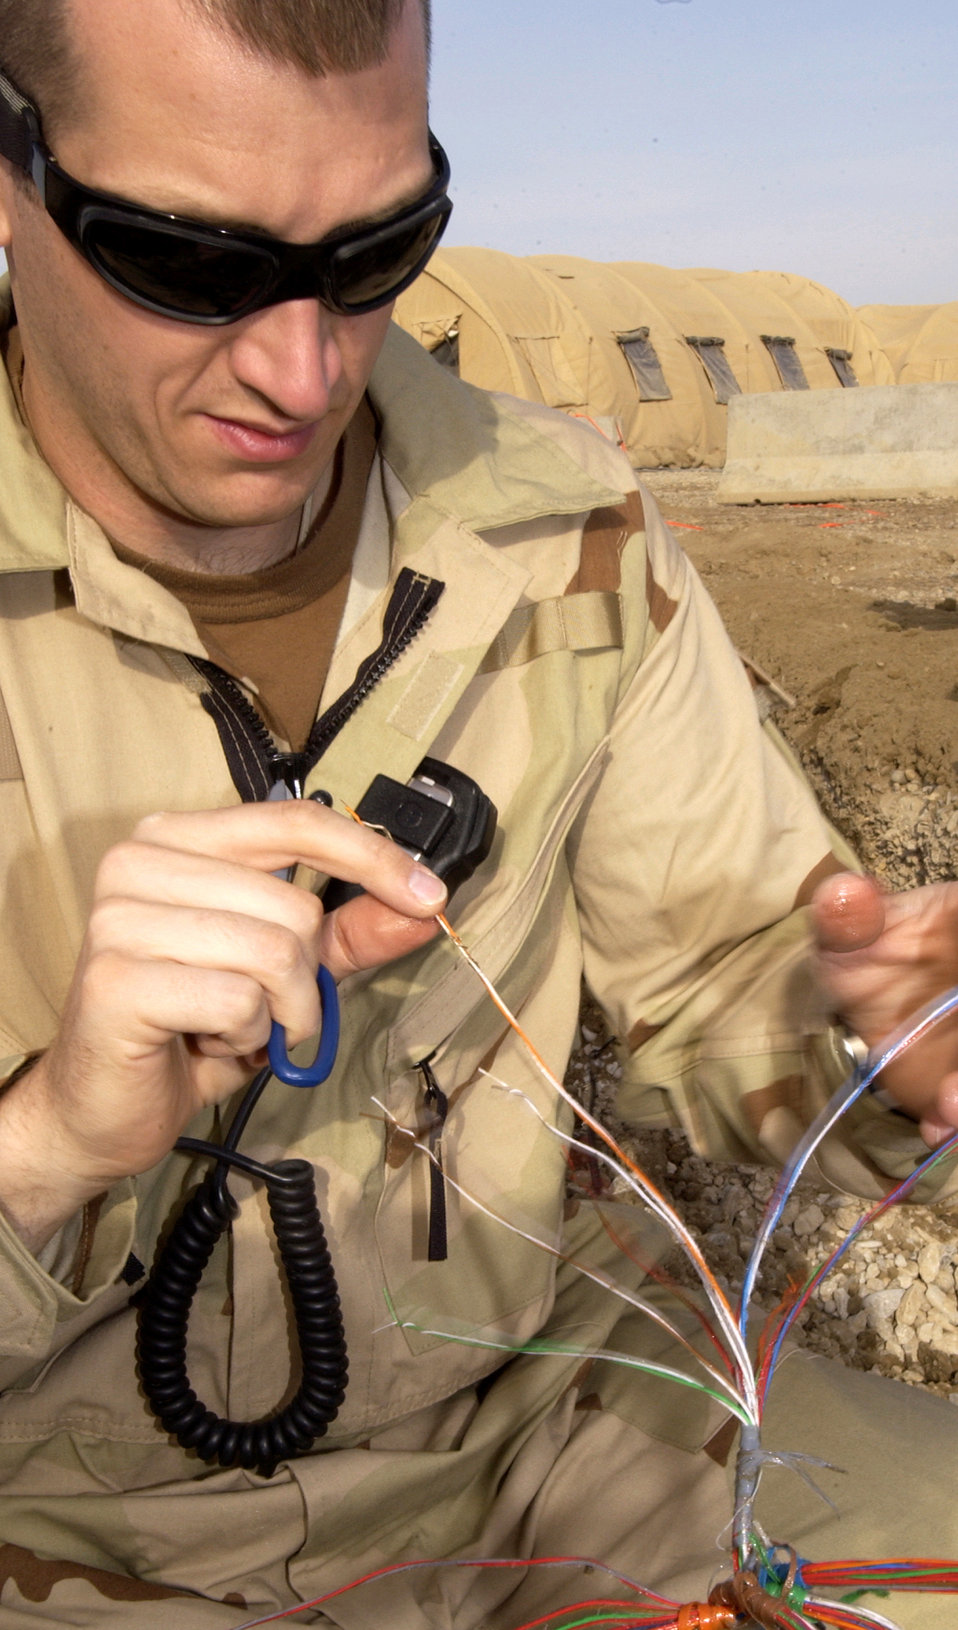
Nice splice

TALLIL AIR BASE, Iraq -- Staff Sgt. Benjamin Heim splices telephone cable that was accidentally cut while workers were digging a trench here April 9. Sergeant Heim is a member the 407th Expeditionary Communications Squadron.